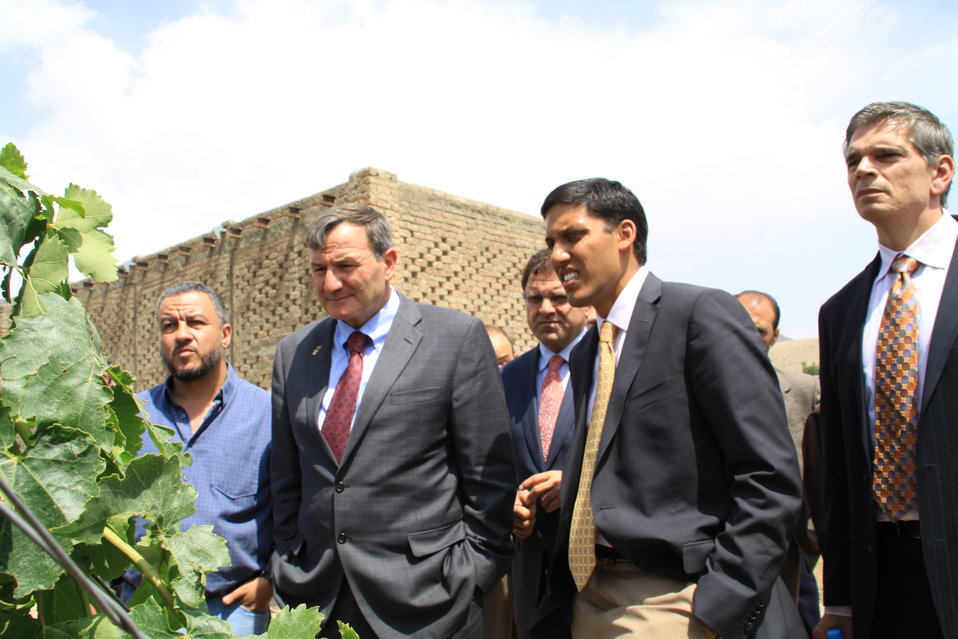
Badam Bagh Farm